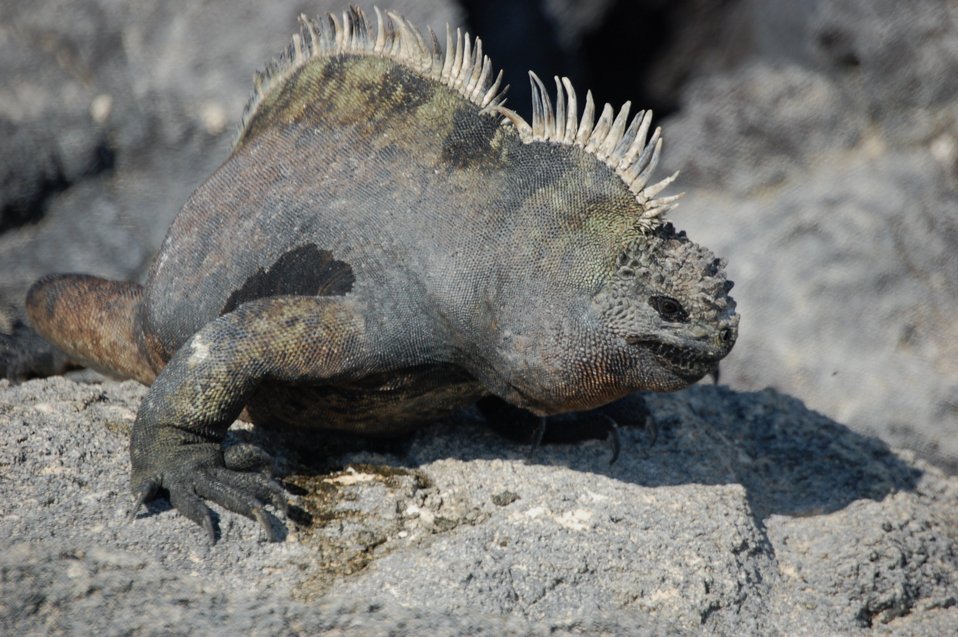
Marine iguana.